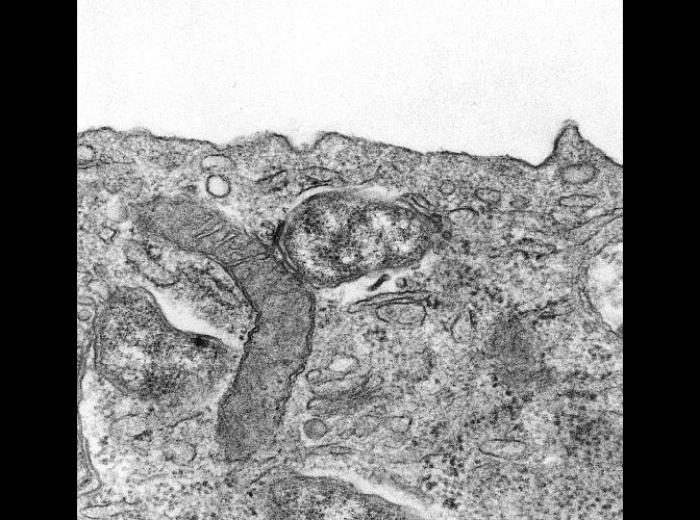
Rickettsia tsutsugamushi within the remains of a phagocytic vacuole of mouse peritoneal mesothelial cell.